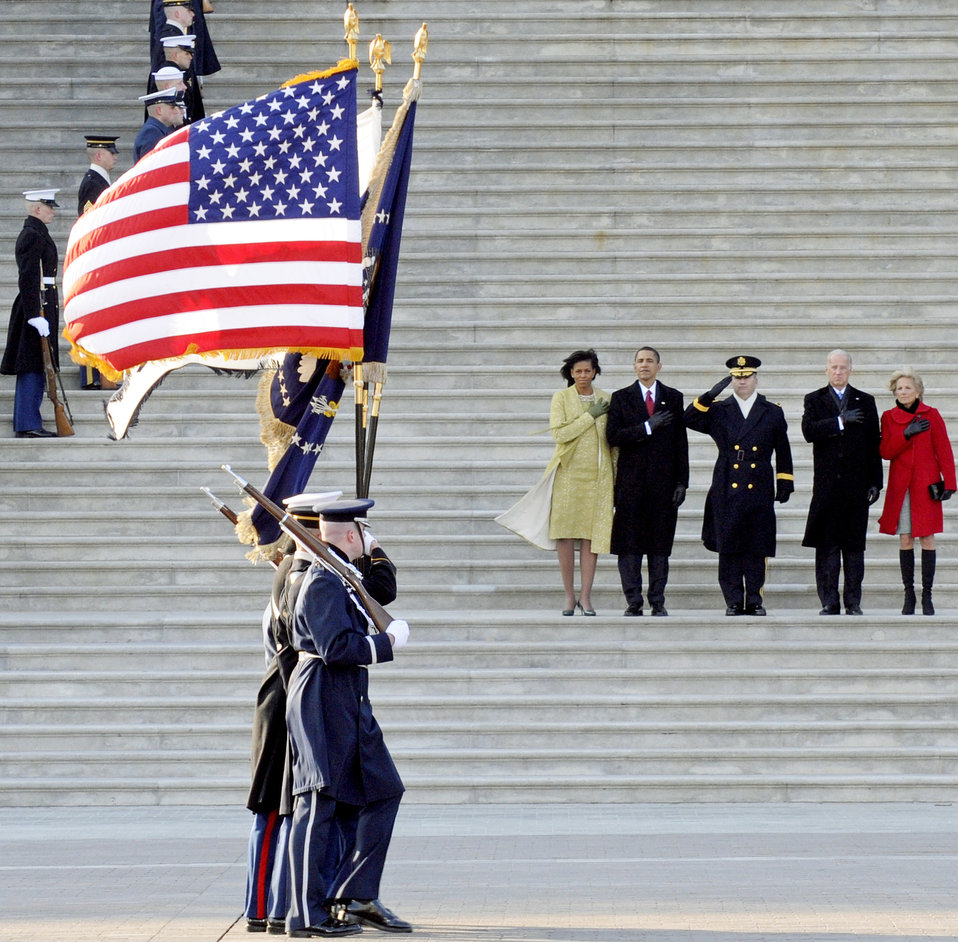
Pass in review

The U.S. Armed Forces Joint Color Guard passes in review of the presidential party in front of the U.S. Capitol Jan. 20 during the 56th Inauguration Day in Washington, D.C.